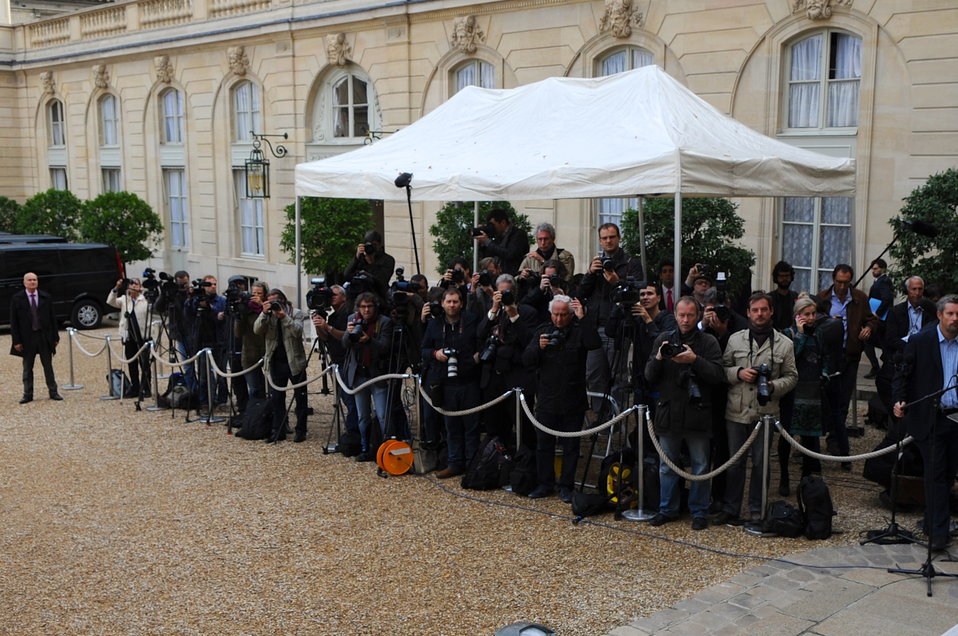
Photographers Await Secretary Kerry, Other P3 Ministers To Emerge From Elysee Palace

A collection of international photographers wait at Elysee Palace in Paris for U.S. Secretary of State John Kerry, French Foreign Minister Laurent Fabius, and British Foreign Secretary William Hague to emerge from a meeting with French President Francois Hollande on September 16, 2013.